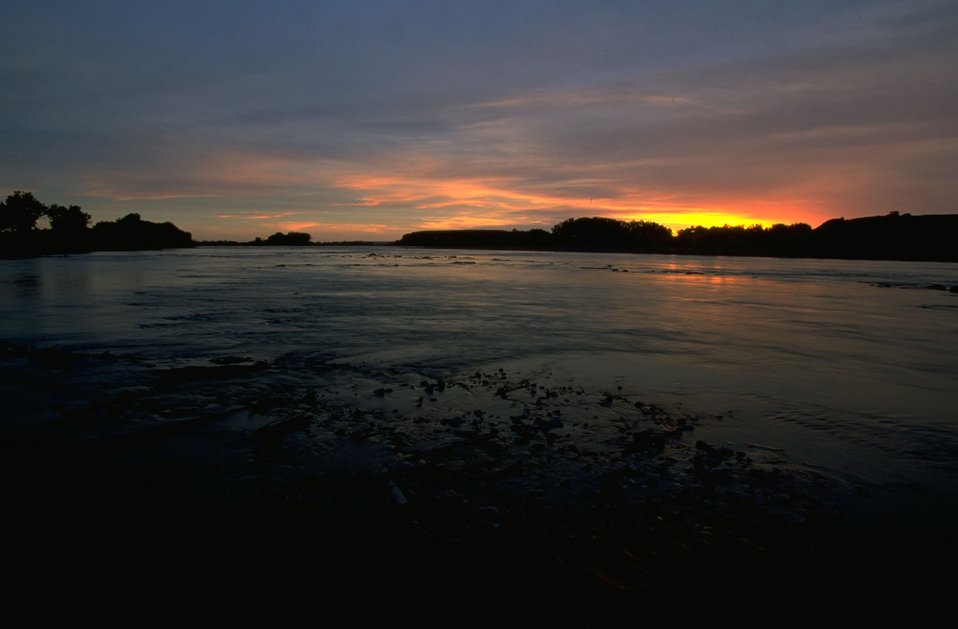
Scenic view of the sunset reflecting on the Yellowstone River